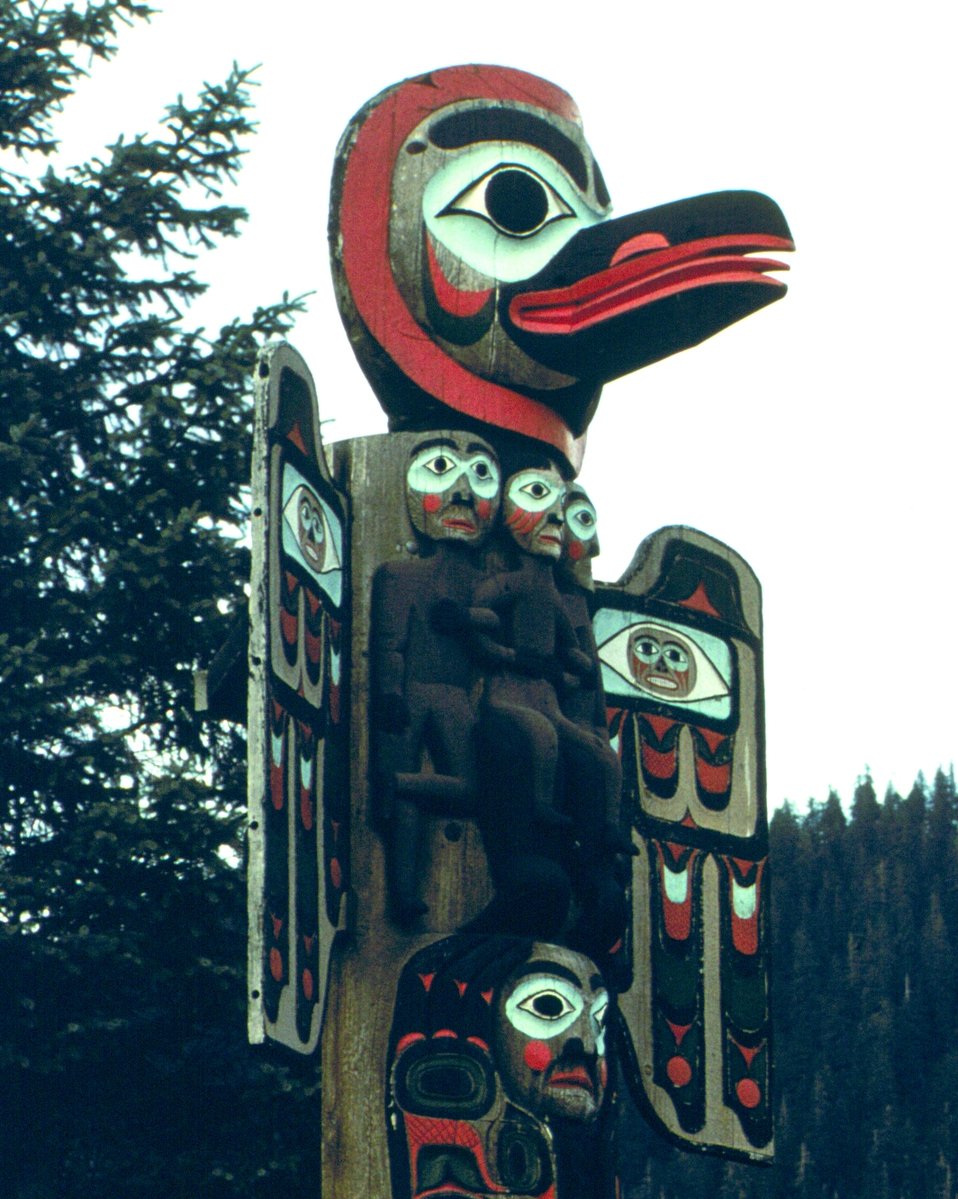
Raven and Sun Totem at Saxman Totem Park outside of Ketchikan.